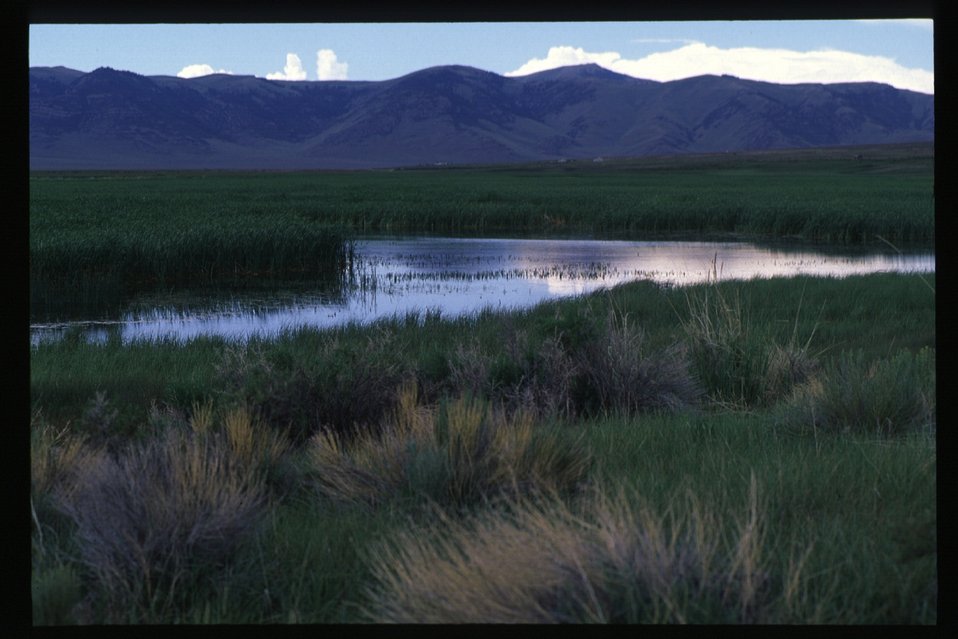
Wetlands, Chilly Slough Overview South Unit Challis Field Office UCSC Upper Columbia Salmon Clearwater District